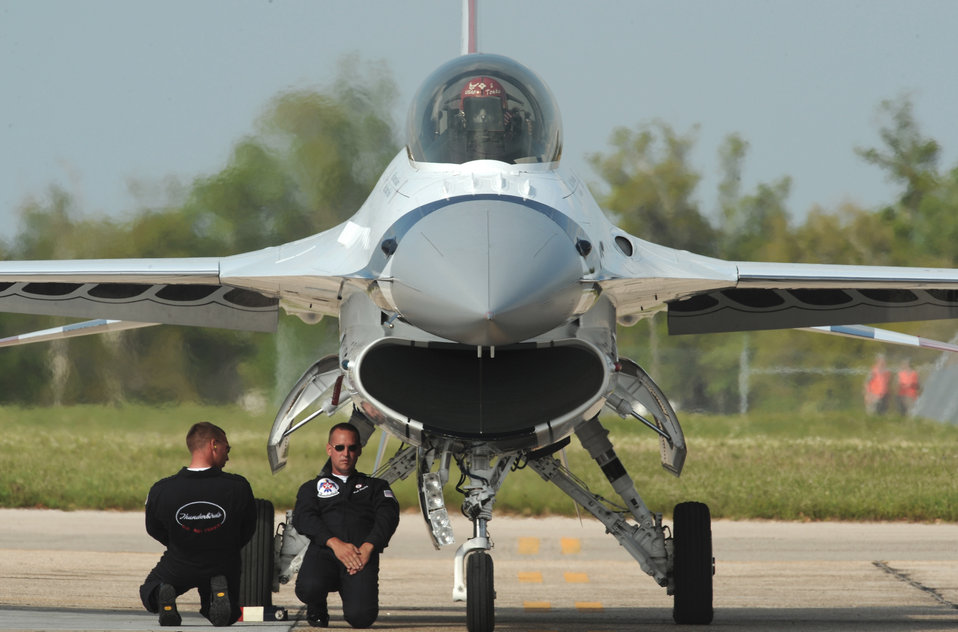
Teamwork ensures Thunderbirds performance

Tech. Sgt. Phil Sawin and Staff Sgt. Mark Stoverink finish their launch procedures prior to Thunderbirds No. 5 taking off April 4 at Keesler Air Force Base, Miss. Sergeants Sawin and Stoverink are crew chiefs for Thunderbirds No. 5.